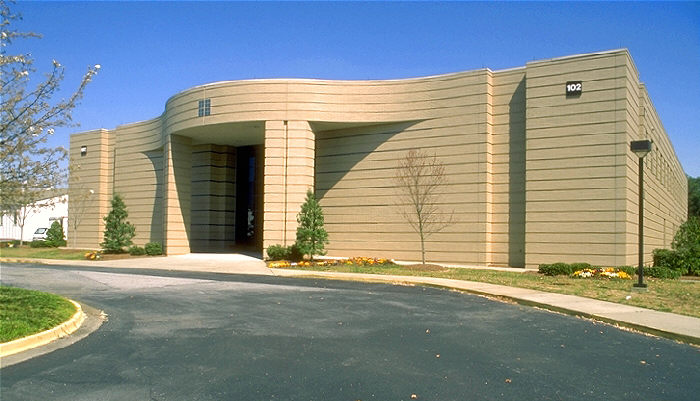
Captured in March, 1999, this image depicts Building 102, located on the Centers for Disease Control's (CDC) Chamblee Campus, in metropolitan Atlanta, Georgia.